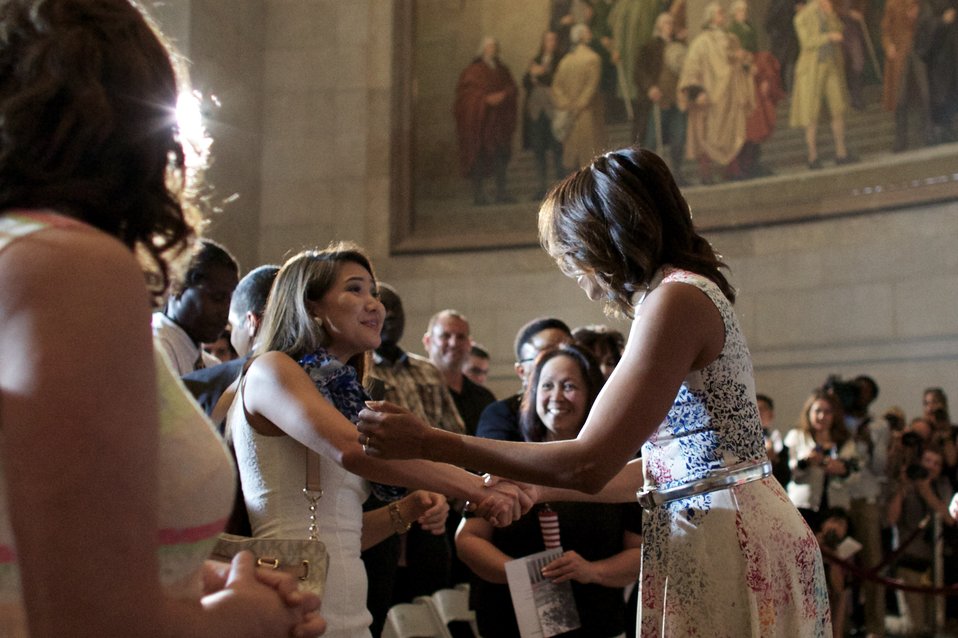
Naturalization Ceremony with Michelle Obama